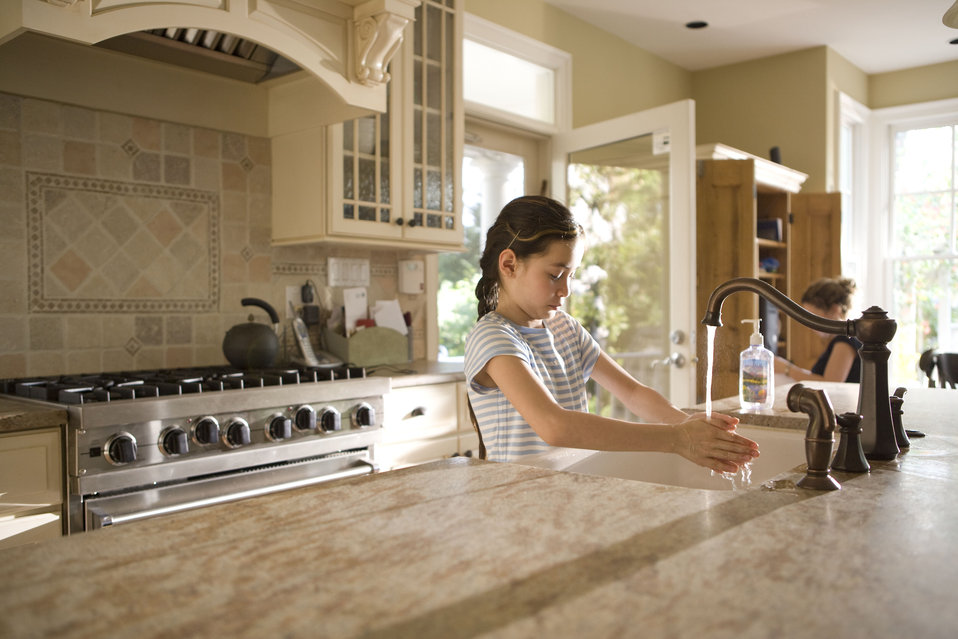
This young girl was shown in the process of properly washing her hands at her kitchen sink, briskly rubbing her soapy hands together under fresh running tap water, in order to remove germs, and contaminants, thereby, reducing the spread of pathogens, and her ingestion of environmental chemicals or toxins. Children are taught to recite the Happy Birthday song, during hand washing, allotting enough time to completely clean their hands.